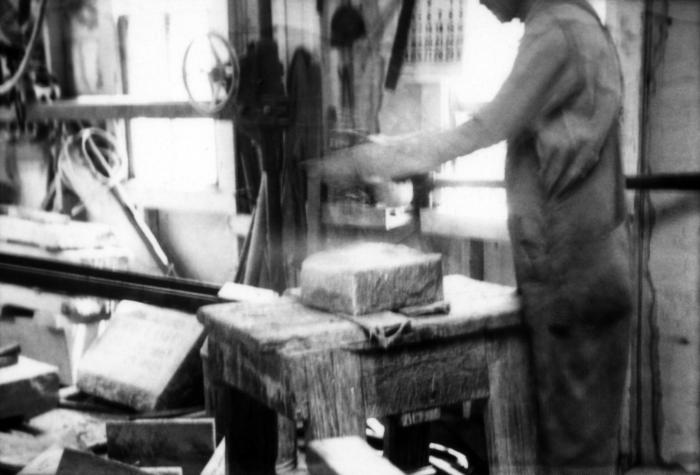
This October 1947 photograph was provided by the Center for Disease Control's (CDC), National Institute for Occupational Safety and Health (NIOSH). The image depicted a stonecutter who was shaping a granite gravestone by using a powered drill sander inside a Kansas workshop. . This man was not wearing any barrier to dust that could have been inhaled, such as a filtered breathing apparatus. Workers like this mason, can be exposed to potential respiratory health hazards as well as other physical injuries when working in the stone cutting and quarrying industries.